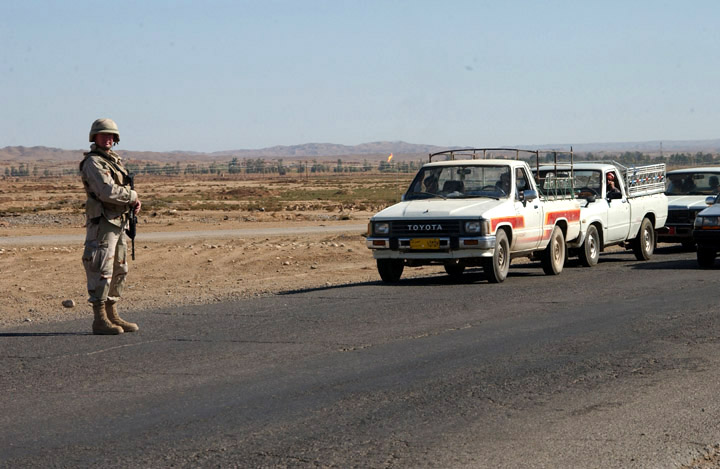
Fire in the hole

KIRKUK AIR BASE, Iraq -- Special Agent Michael Ilse stops traffic along a road here while explosive ordnance disposal technicians destroy 12 Iraqi rockets found in downtown Kirkuk on Nov. 4. Ilse is an agent with the Air Force Office of Special Investigation for Region 2.